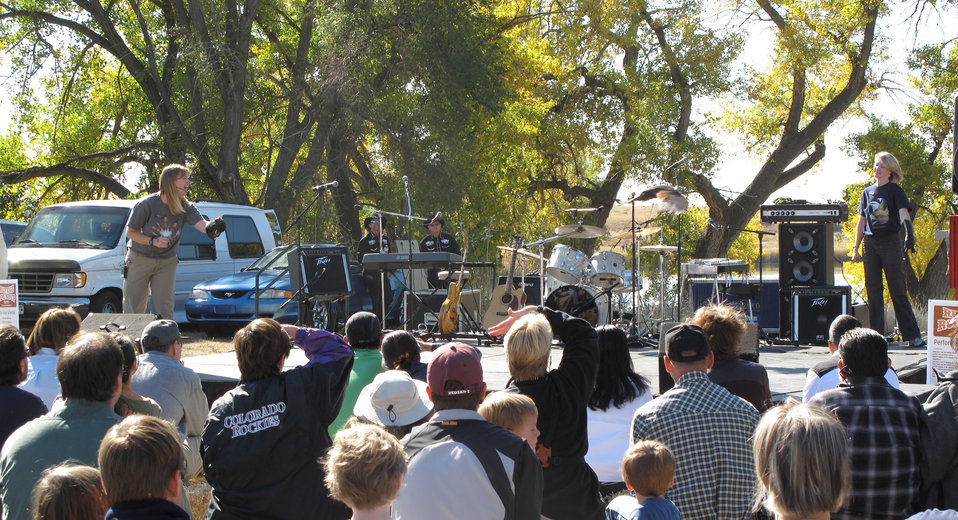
Refuge Round-up 2010

Hawkquest performance.